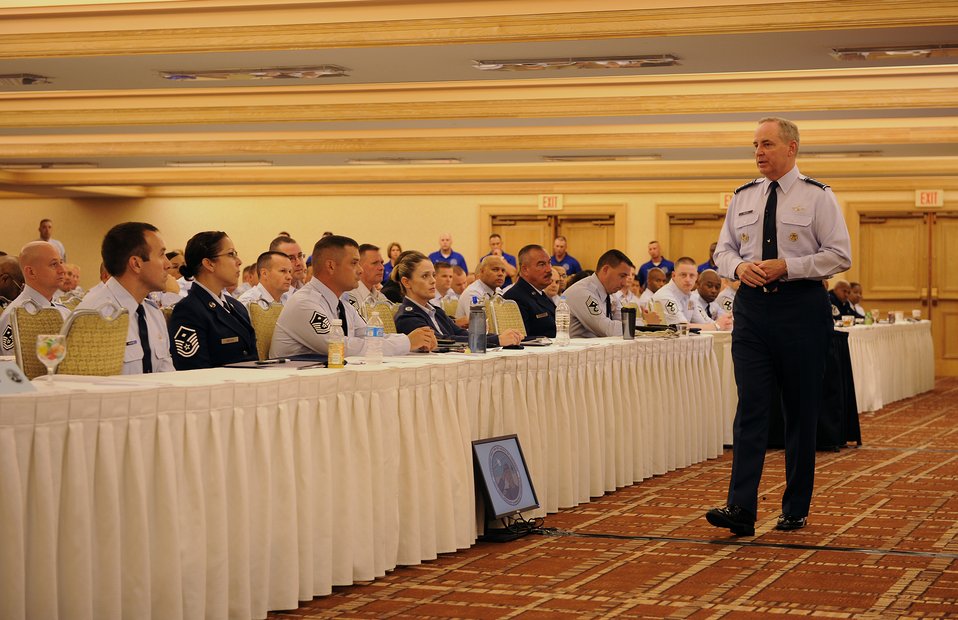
CSAF talks leadership

Air Force Chief of Staff Gen. Mark A. Welsh III speaks to Airmen during the Air Force First Sergeant Leadership Conference at Jacksonville, Fla., Aug. 15, 2012. The conference gathers active duty, Guard and Reserve first sergeants from across the service to discuss issues affecting the mission, Airmen and their families.